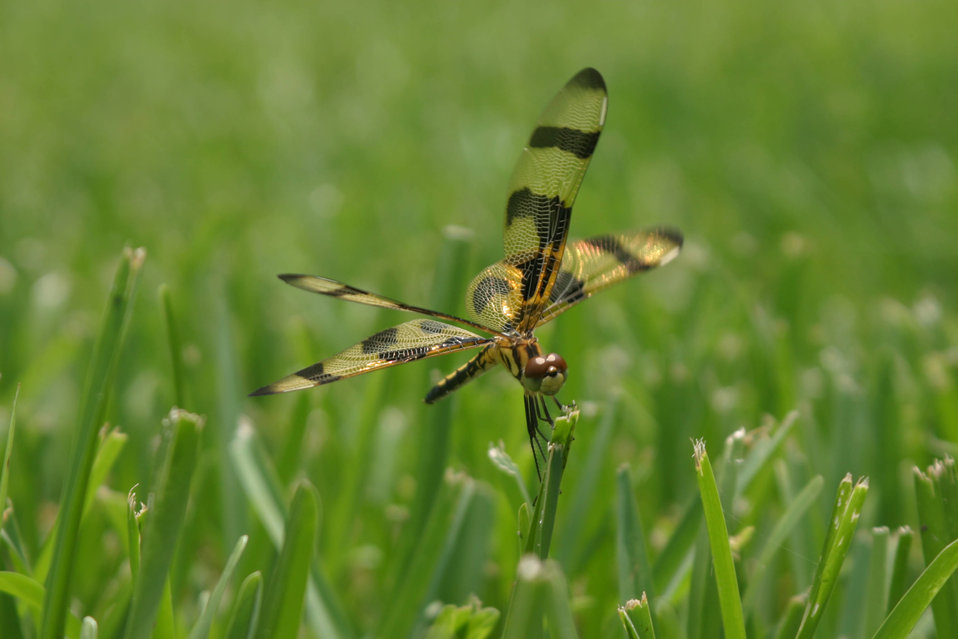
Halloween Pennant dragonfly

So named for its black and orange wings. Look for the dragonfly at almost any oxbow or wetland at Patoka River National Wildlife Refuge, in IN, in the summer and fall.